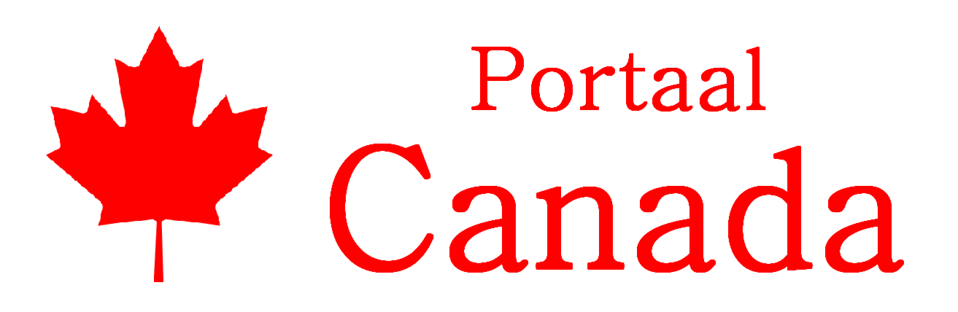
Nederlands: Kop Portaal:Canada.